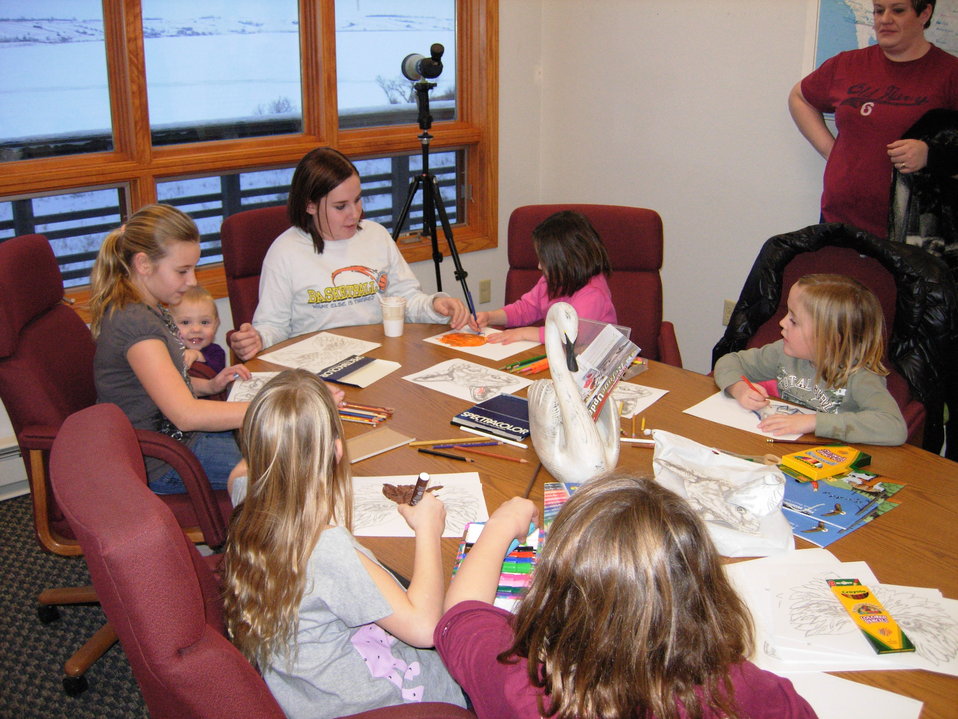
Creating Masks

Youth having fun coloring their 'creature' masks as an activity during Des Lacs Refuge 75th birthday celebration.